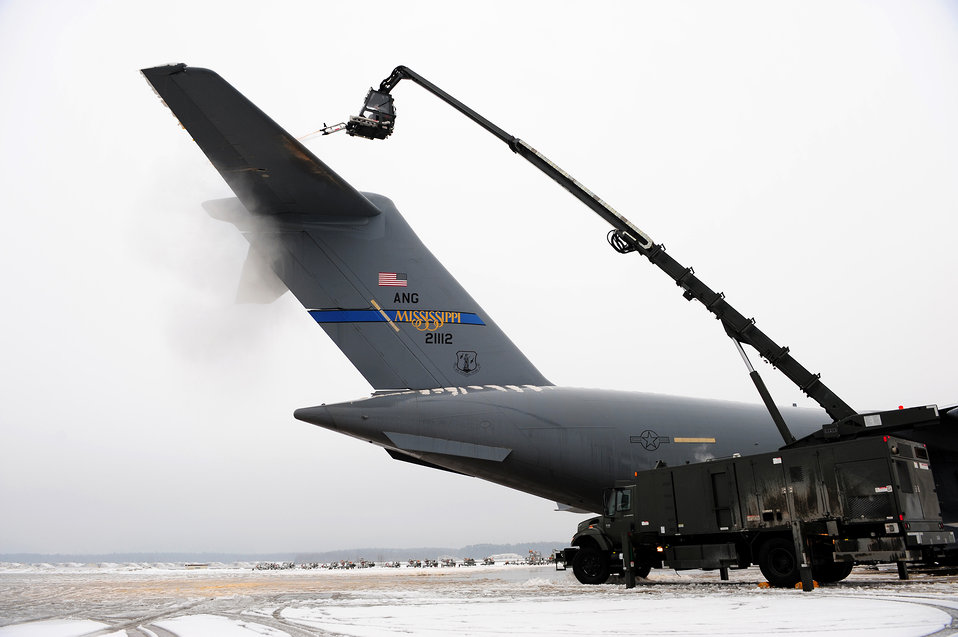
No ice here

A crane operator from the 721st Aircraft Maintenance Squadron at Ramstein Air Base, Germany, de-ices a C-17 Globemaster III Dec. 7, 2010. The C-17 is from the Mississippi Air National Guard. Aircraft de-icing is a process in which liquid solutions are sprayed onto an aircraft during the winter's chill to both defrost and prevent future precipitation from freezing.